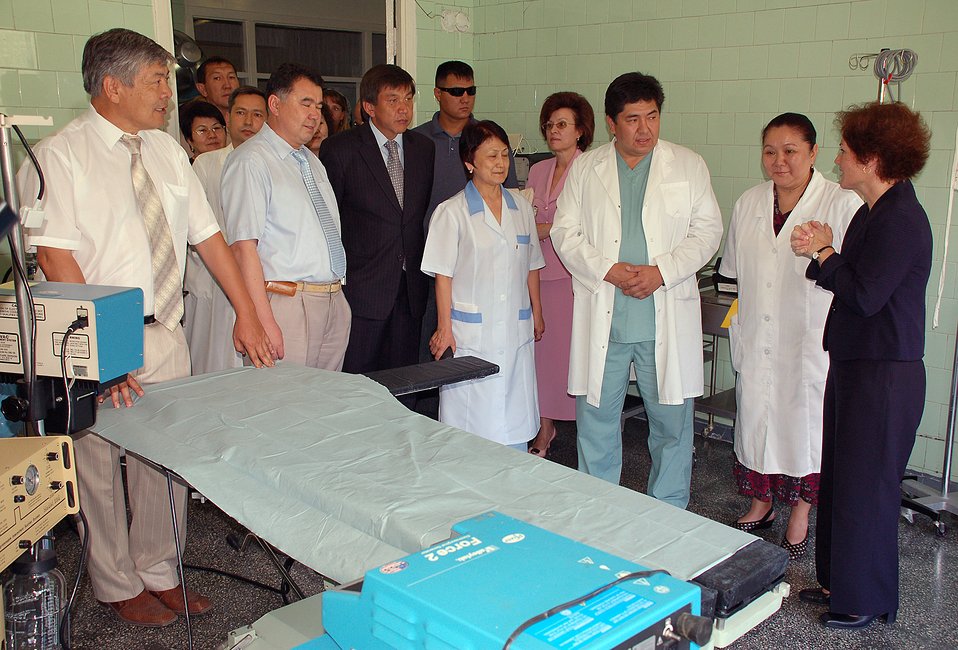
Manas medical group provides hope to local hospitals

Marie Yovanovitch, U.S. ambassador to the Kyrgyz Republic, tours the National Center of Oncology in Bishkek, Kyrgyzstan, to see the medical equipment provided by the 376th Expeditionary Medical Group at Manas Air Base.